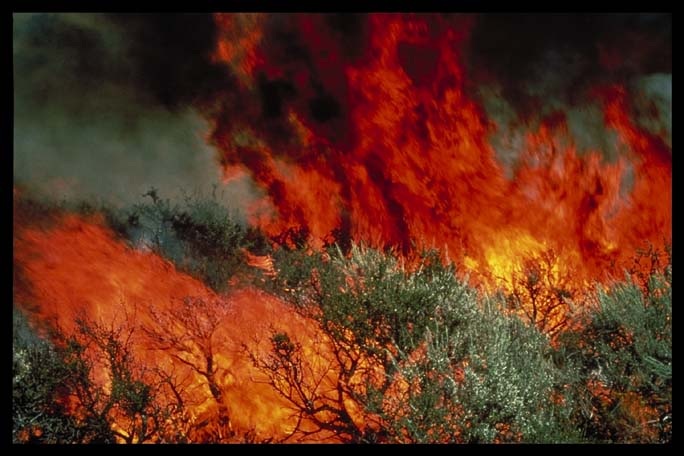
Wildland fire